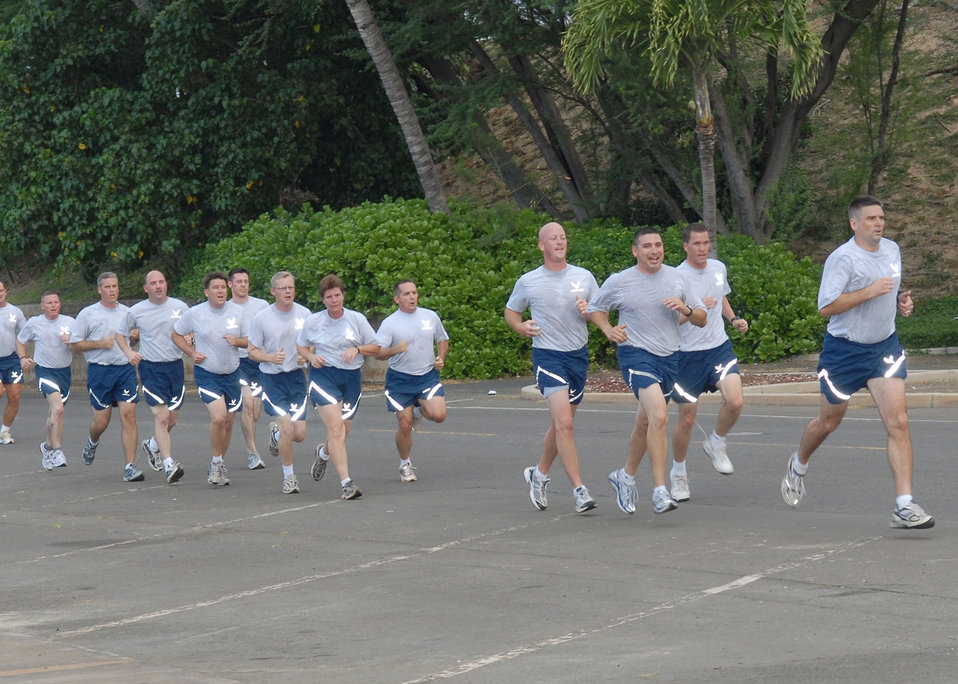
Beach workout

Members of the A-staff at Pacific Air Forces run in formation May 27 at Hickam Air Force Base, Hawaii, during a morning